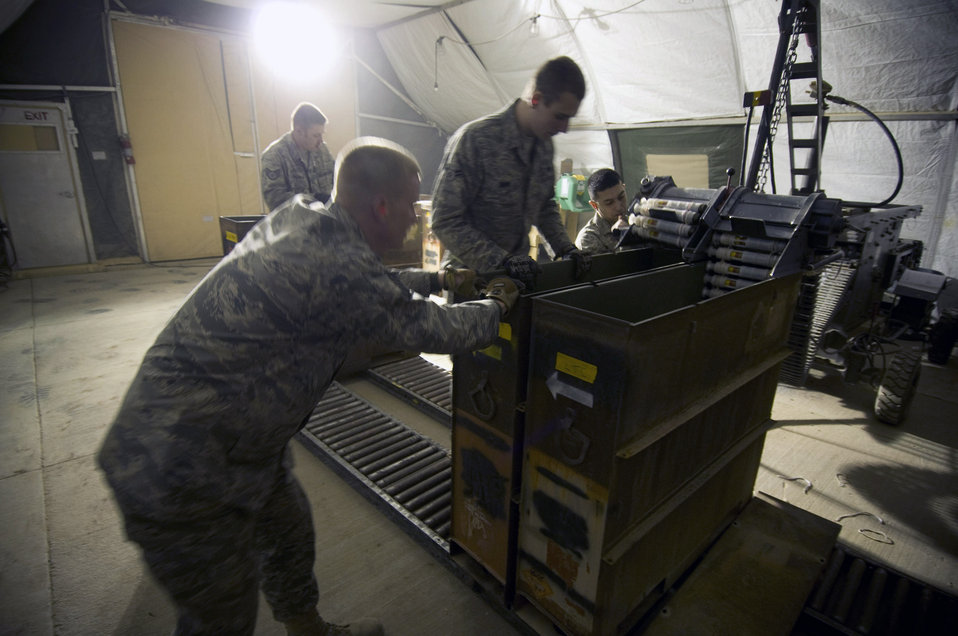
Feeding the Thunderbolt II

Airmen of the 455th Expeditionary Maintenance Squadron Ammo Flight position an empty container to receive processed rounds from a GFU-7